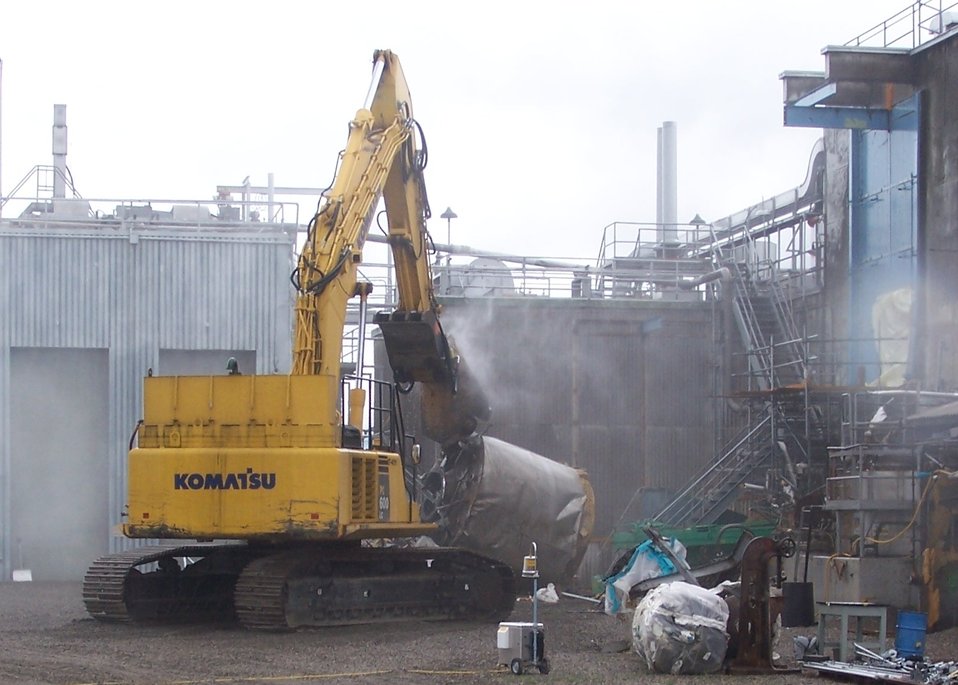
203-UX demolition begins